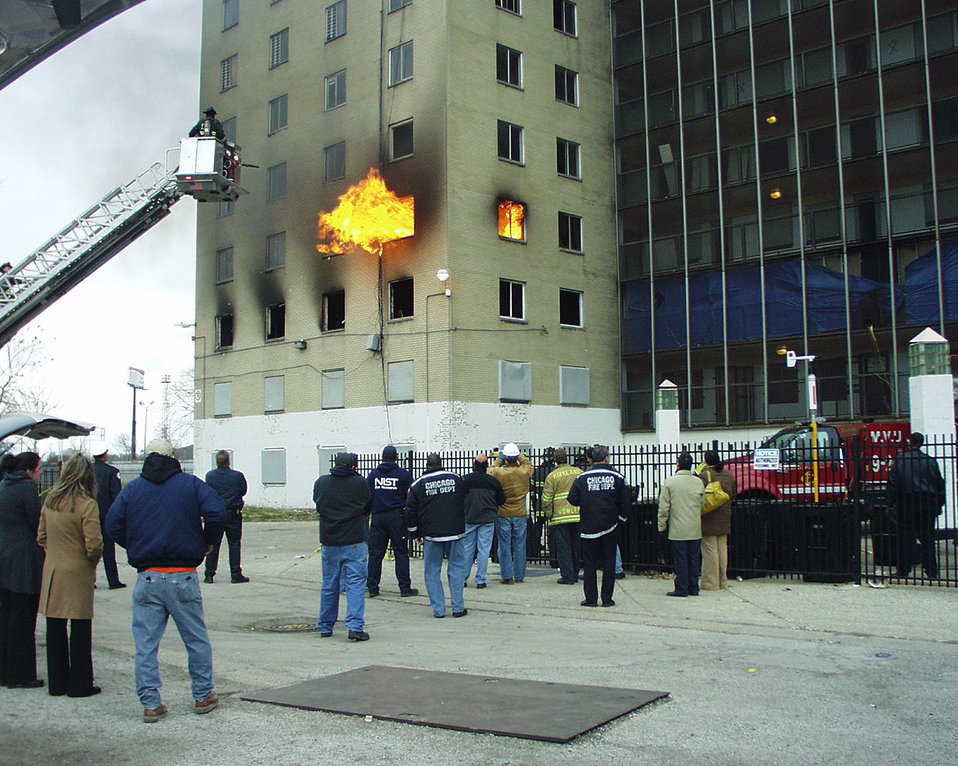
High-rise fires; Positive Pressure Ventilation

Members of a research team watch flames erupt from an abandoned Chicago apartment building during a November 10, 2006, test of positive pressure ventilation in high-rise fires. Red truck (lower right corner) is a mobile ventilation system blowing air through the front door of the test building to keep the corridors and stairwells passable, while forcing the fire outside.